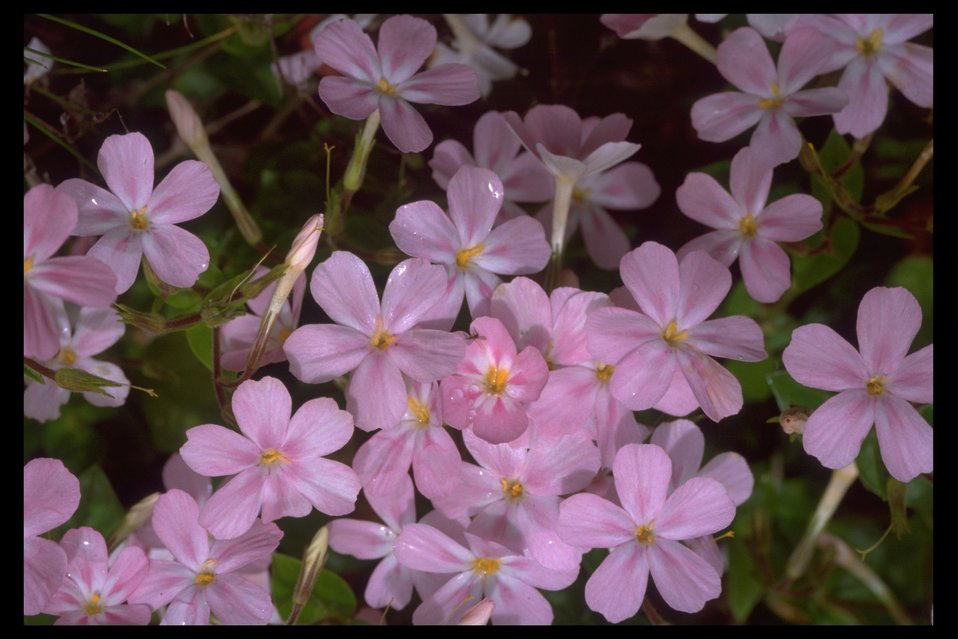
Woodland Phlox (Phlox adsurgens) at Upper Trail Creek.